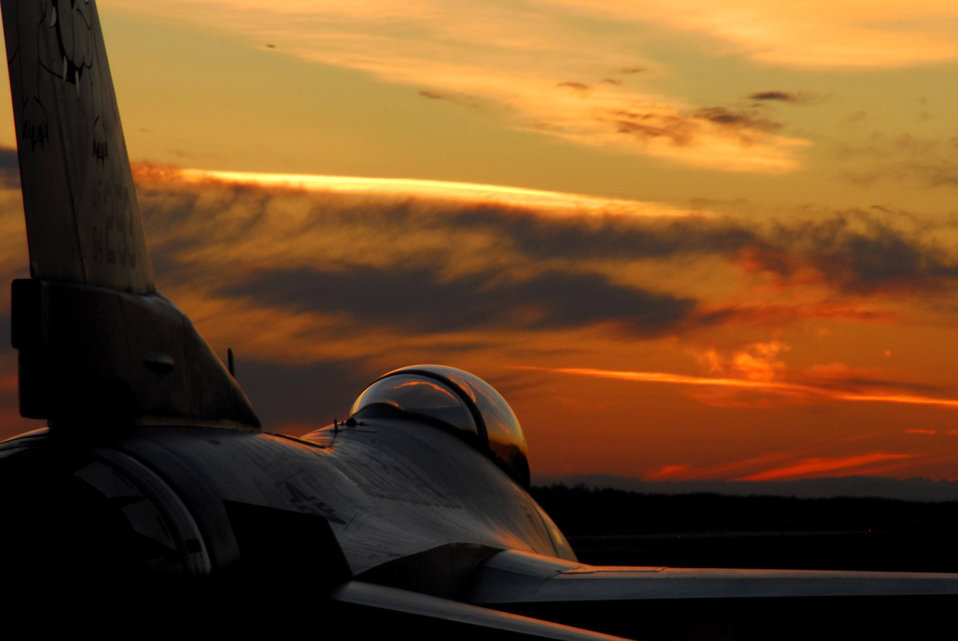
Sun sets on Minnesota Falcons

A 148th Fighter Wing F-16 Fighting Falcon from the Minnesota Air National Guard rests for the day awaiting the next day's inspection Oct. 13in Duluth, Minn. The unit is undergoing an Operational Readiness Inspection designed to evaluate the wing's ability to prepare and deploy servicemembers, equipment and support assets to a combat environment.